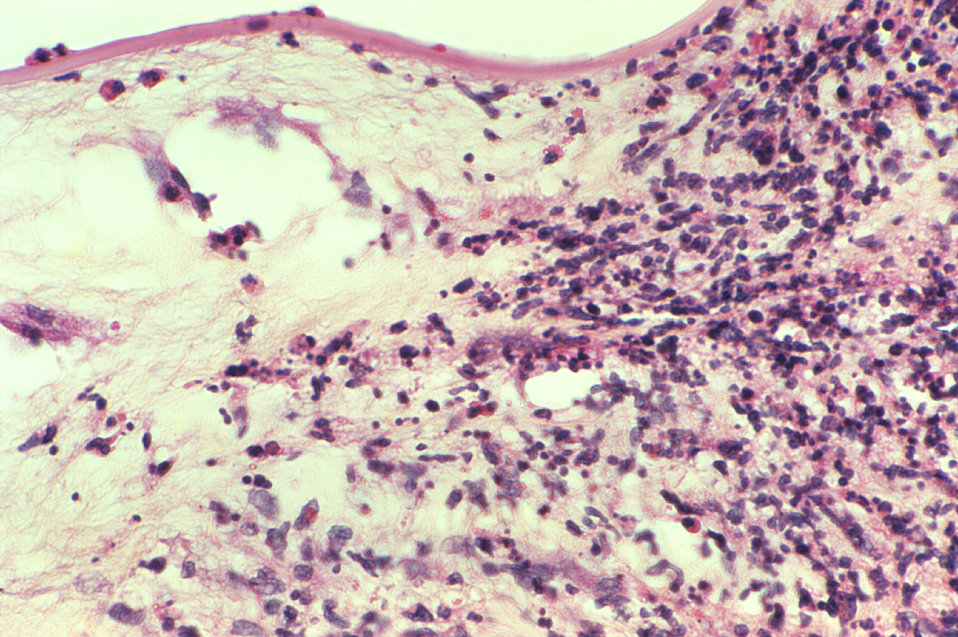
Under a low magnification of 100X, this photomicrograph revealed some of the ultrastructural cytoarchitectural histolopathology found at the site of a corneal lesion caused by what was determined to be saprophytic Tritirachium roseum fungal organisms. This corneal tissue sample was stained using hematoxylin and eosin (H&E) stains in order to highlight the tissue's histopathologic changes, which reflected an inflammatory response accented by the presense of a high number of various white blood cells, edema, and necrosis.